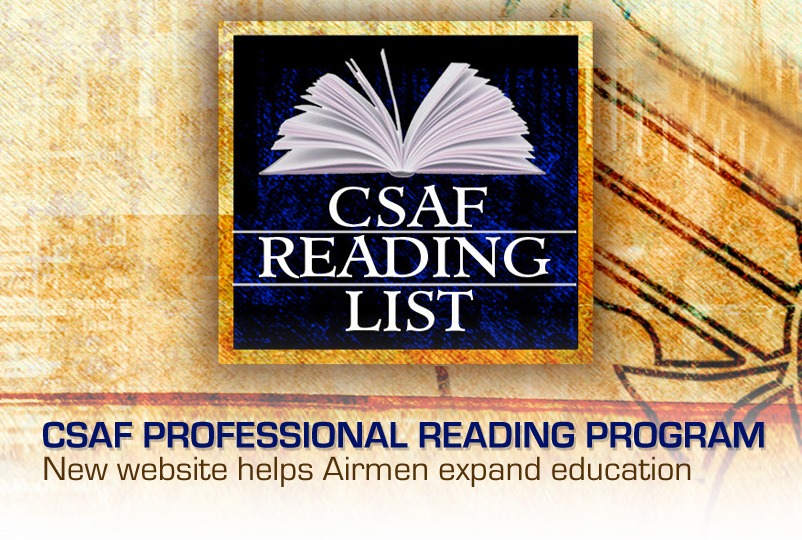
CSAF Professional Reading Program